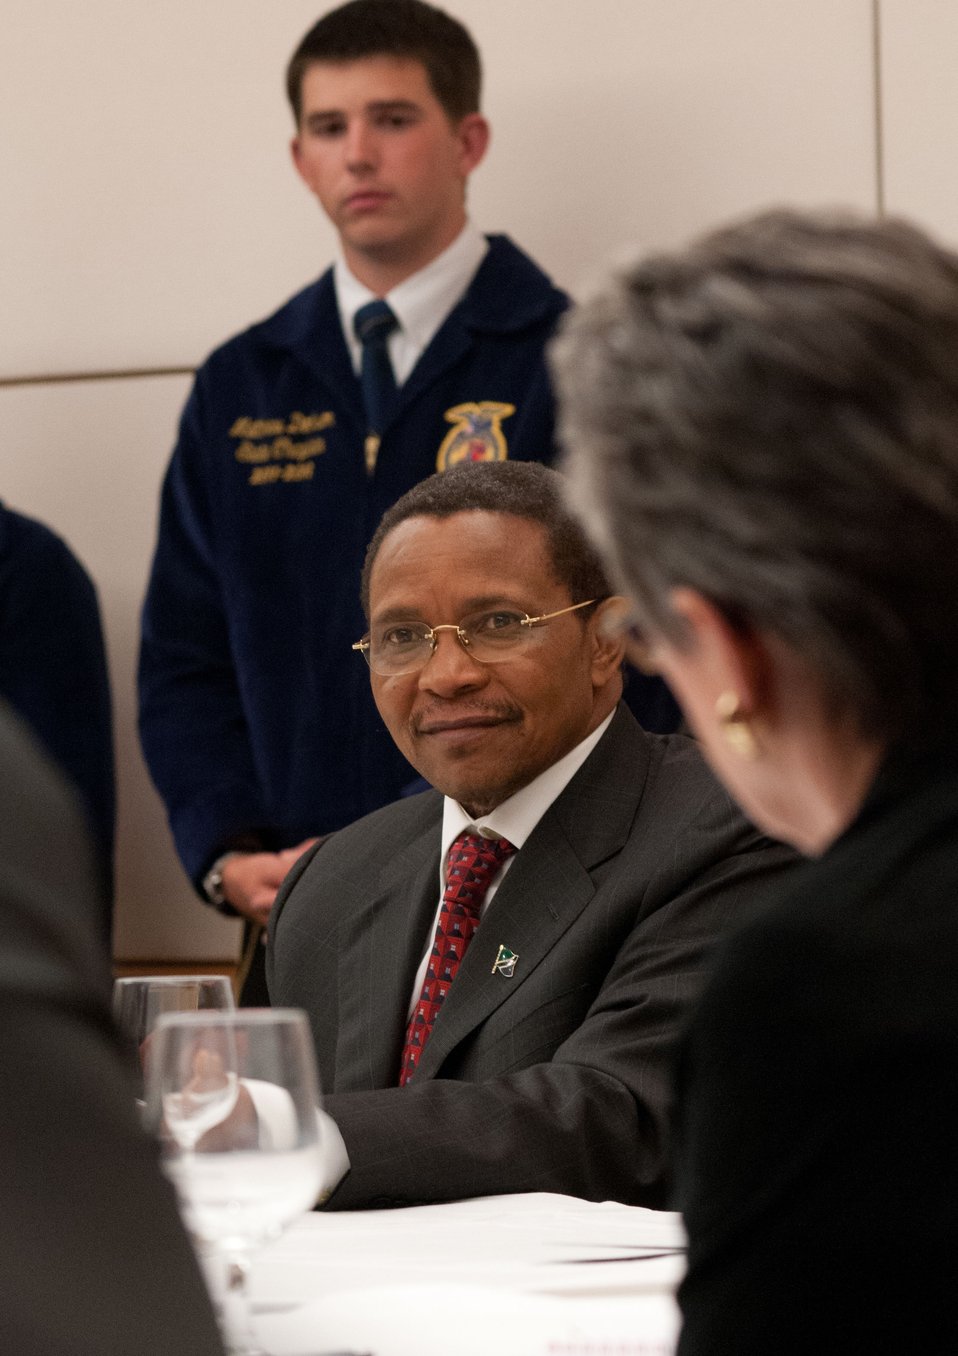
President of the United Republic of Tanzania His Excellency Jakaya Kikwete makes remarks at the African Heads of State conference at the Ronald Reagan Federal Building in Washington, D.C., on Friday, May 18, 2012. Behind him, FFA state officer, Matthew Dodson observes the proceedings.